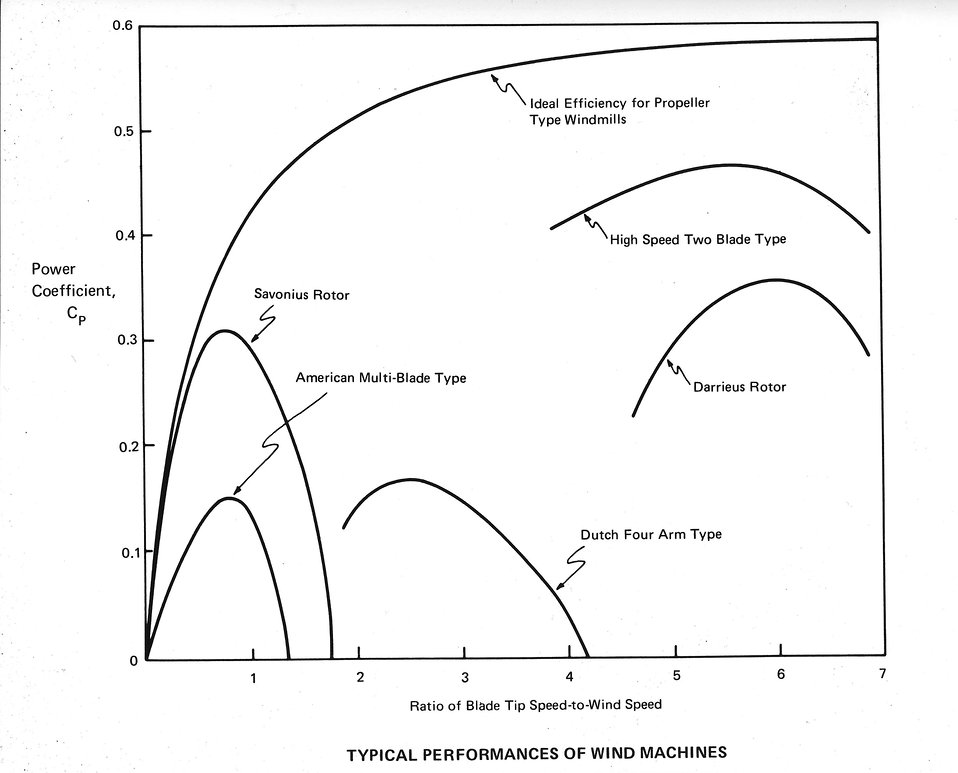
Old-fashioned wind machines, like the four-arm Dutch windmill and the multi-bladed American farm windmill, had blades that moved slowly in comparison with the wind speed, and were capable of capturing less than 20 percent of the available power in the wind. c. 1977